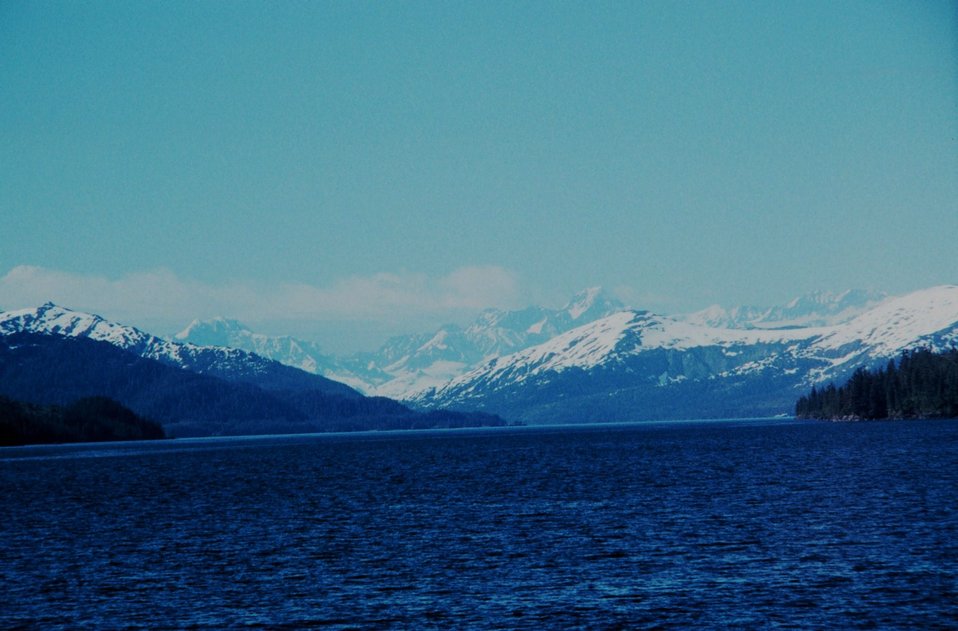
Prince William Sound